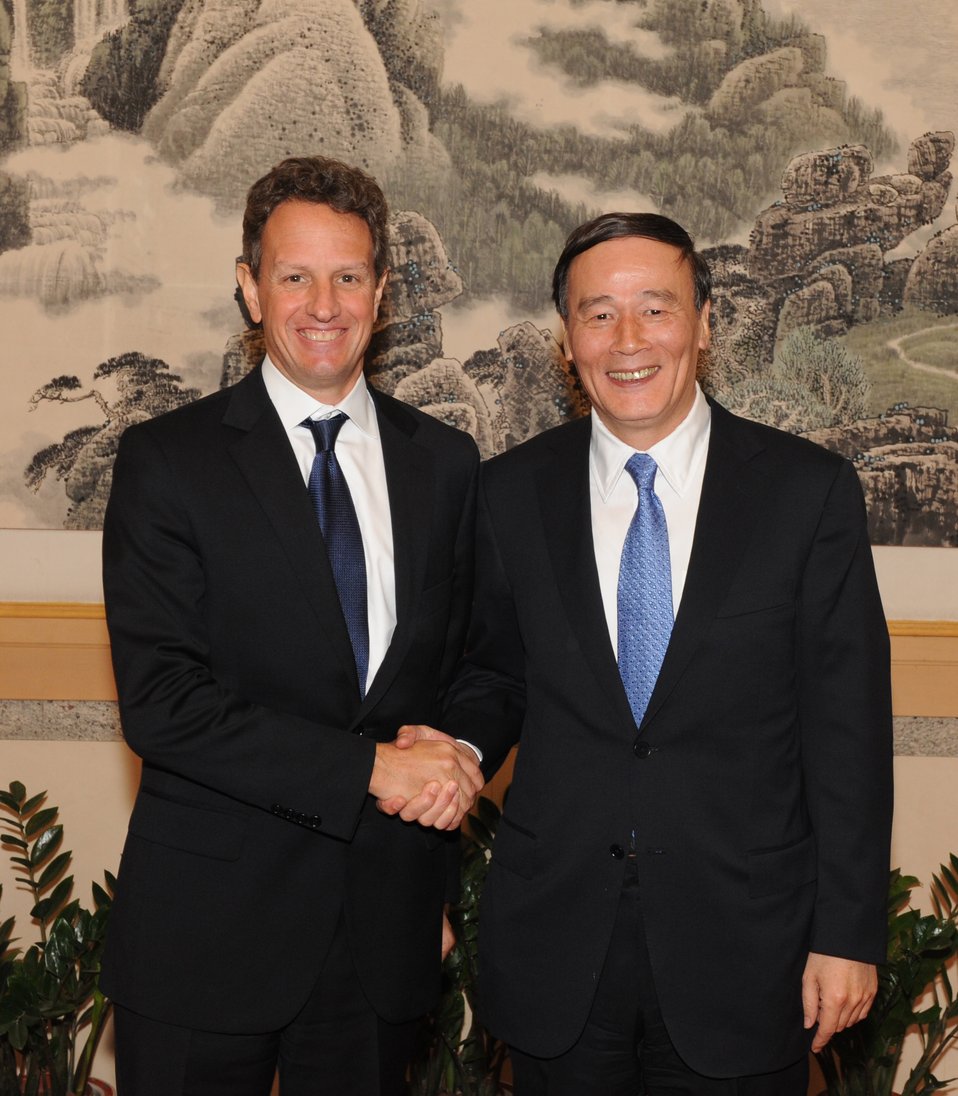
Geithner-Wang Qishan Meeting

On October 24, 2010, U.S. Treasury Secretary Timothy Geithner, President Barack Obama's special representative, met with Vice Premier Wang Qishan of the State Council and special representative of Chinese President Hu Jintao at the airport in Qingdao, China. The two sides exchanged views on U.S.-China economic relations and the preparation for the Leaders' Summit in Seoul.